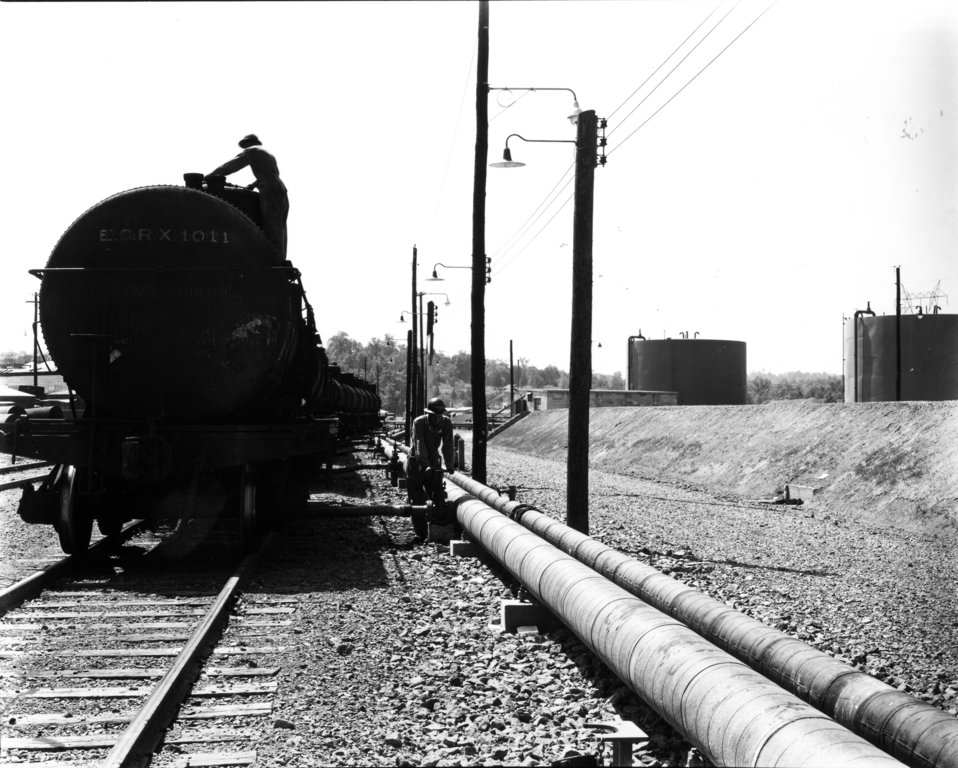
Schools at Oak Ridge